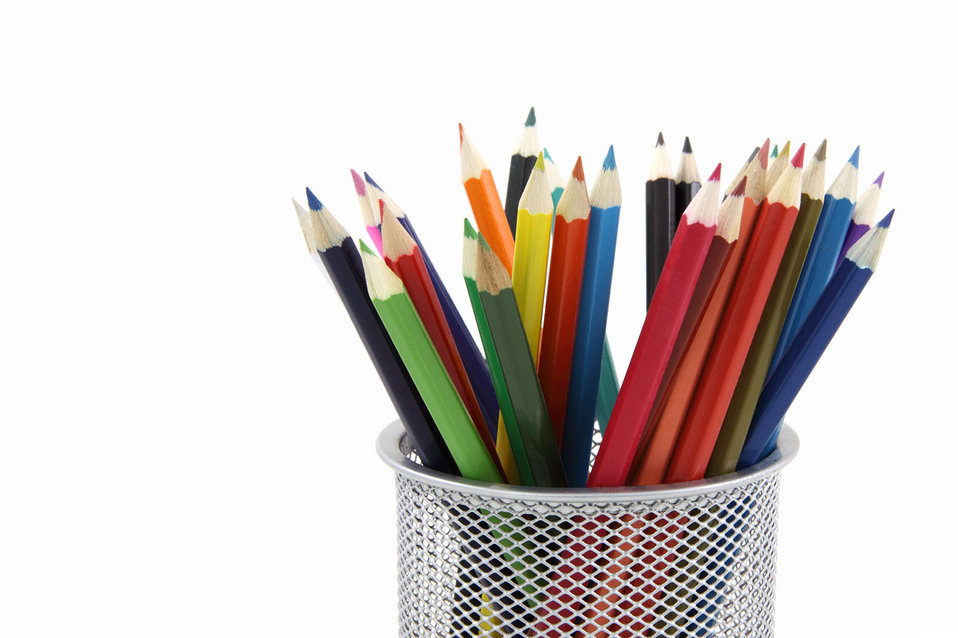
Colored pencils in pencil holder.